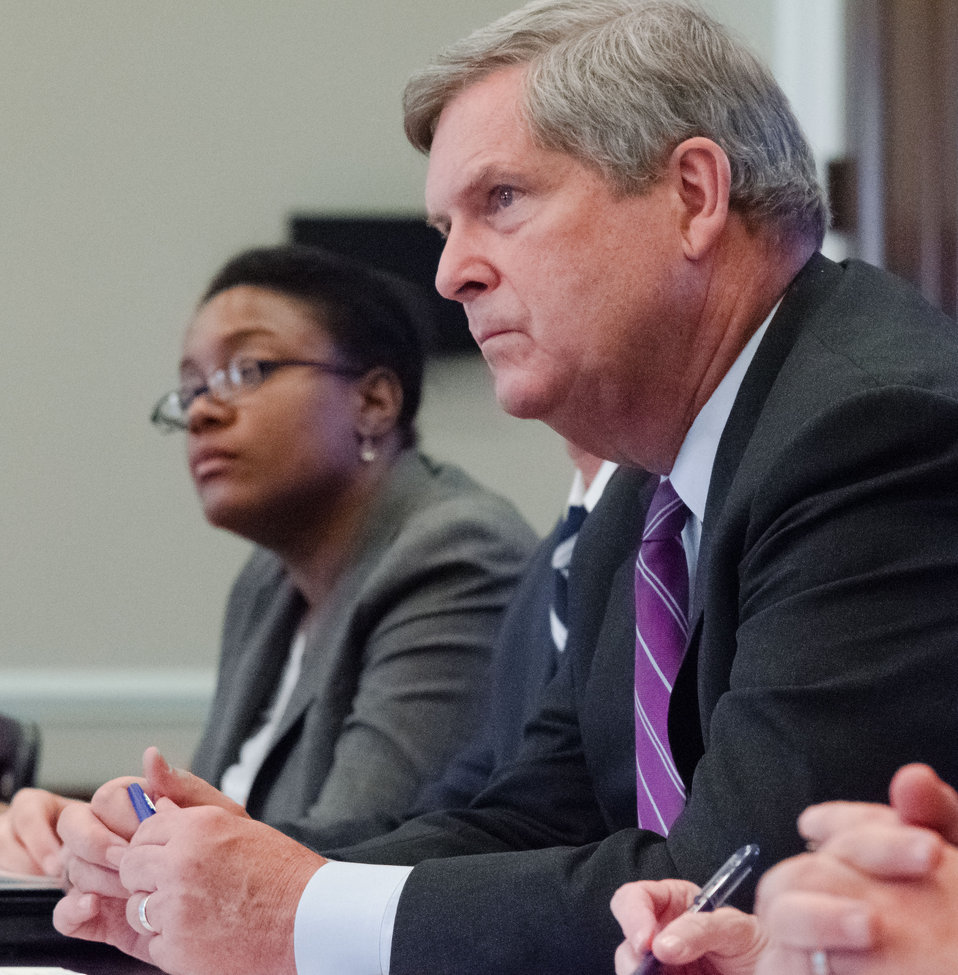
Agriculture Secretary Tom Vilsack (right) and White House Deputy Assistant to the President for Economic Policy Danielle Gray listen during a meeting of the White House Rural Council held at the White House in Washington, D.C. on Friday, Oct. 5, 2012. The White House Rural Council discussed recent White House announcements and Secretary Vilsack asked council members to outline their work plan for the coming months.